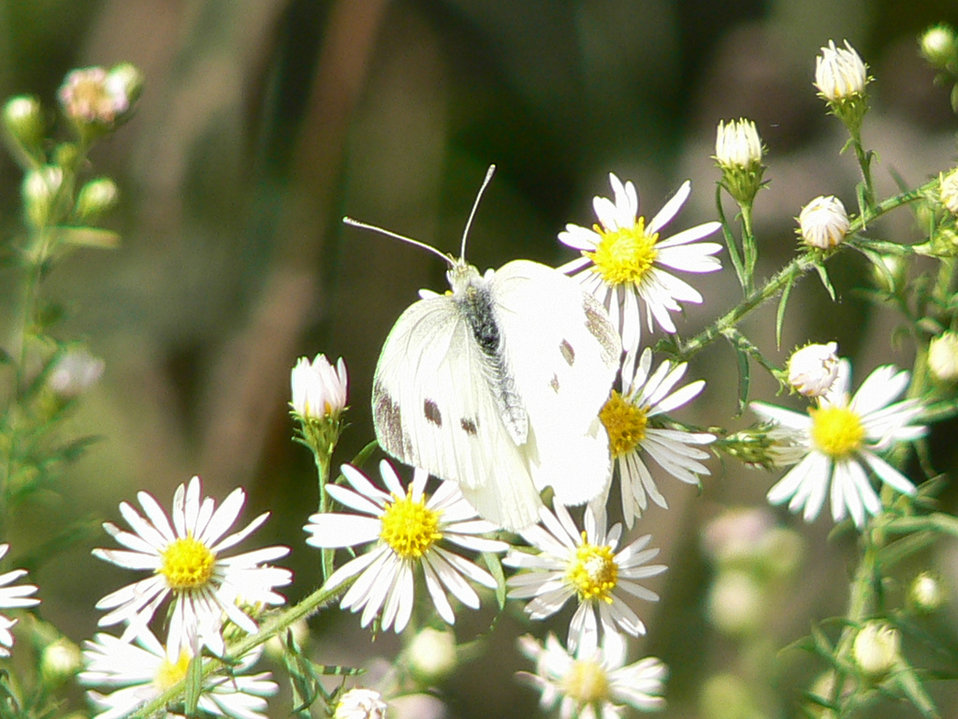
cabbage white butterfly on frost aster

Cape May National Wildlife Refuge, NJ